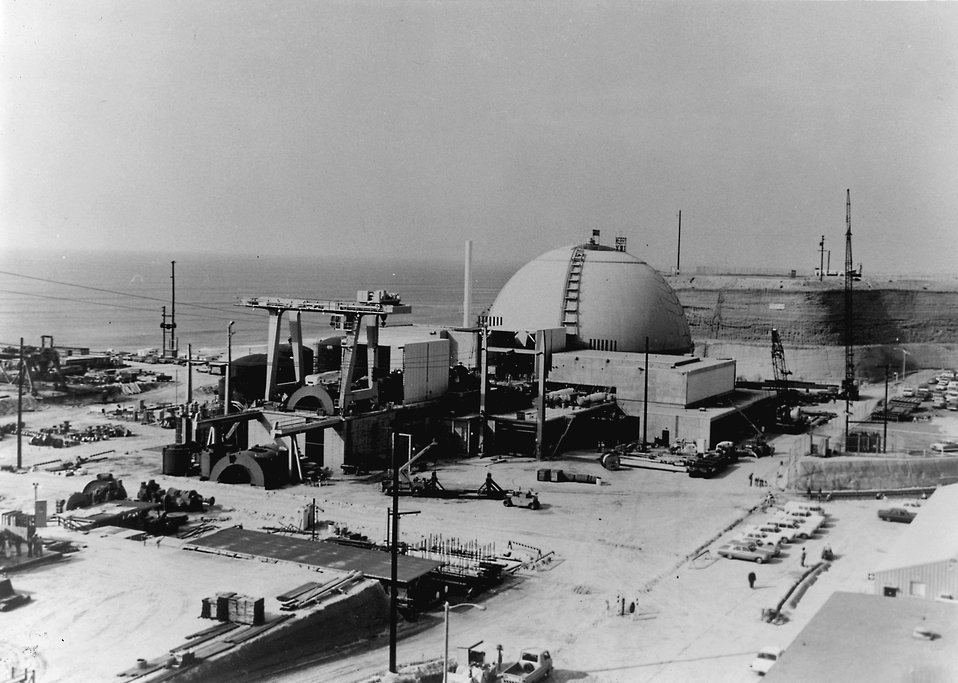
The San Onofre Nuclear Generating Station at Camp Pendleton, California, will provide 430,000 gross electrical kilowatts. Circa 1967.